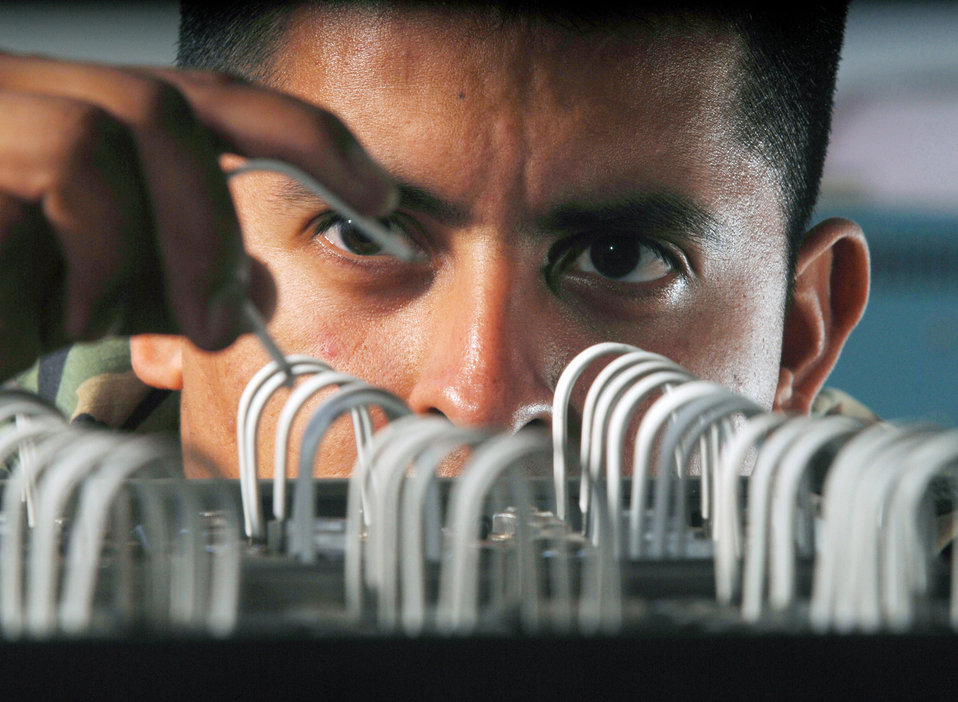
Get a charge out of work

Staff Sgt. Abraham Lagunas installs a shortening clip on a C-17 Globemaster III nickel-cadmium battery before reconditioning it at March Air Reserve Base, Calif. on Sept. 3. The clips short out the battery cells to prevent electrical shock. Sergeant Lagunas is an aircraft mechanic with the 452nd Maintenance Squadron.